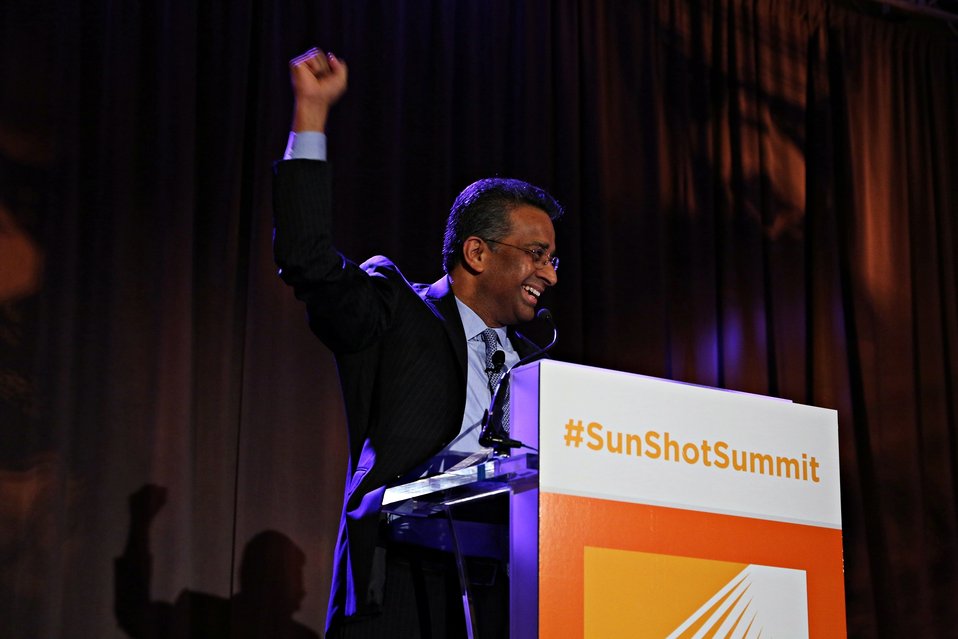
Day 2 Keynote Session 2

Dr. Ramesh, Deputy Director for Science and Technology for Oak Ridge National Laboratory gives an emotive keynote address.